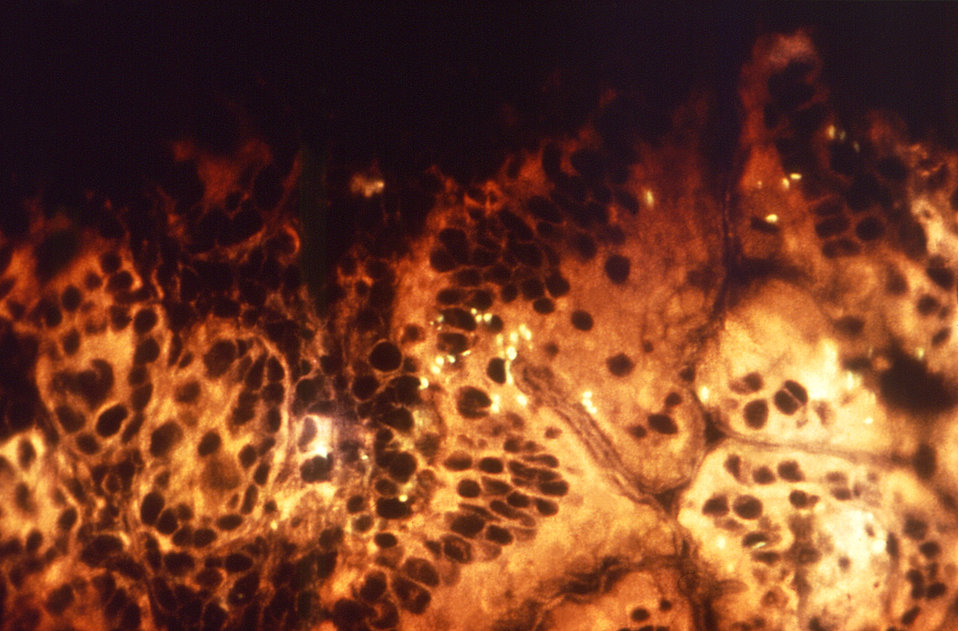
This micrograph reveals some of the histopathologic changes found in an intestinal tissue specimen indicative of second-stage shigellosis. At this point in the pathogenesis, the Shigella sp. bacteria had penetrated the intestinal mucosal lining. See PHIL 6658, for a micrograph revealing cytoarchitectural changes seen in first stage shigellosis, and PHIL 15088, where you'll note the frank loss of normal simple columnar cytoarchitectural patency in late-stage shigellosis.